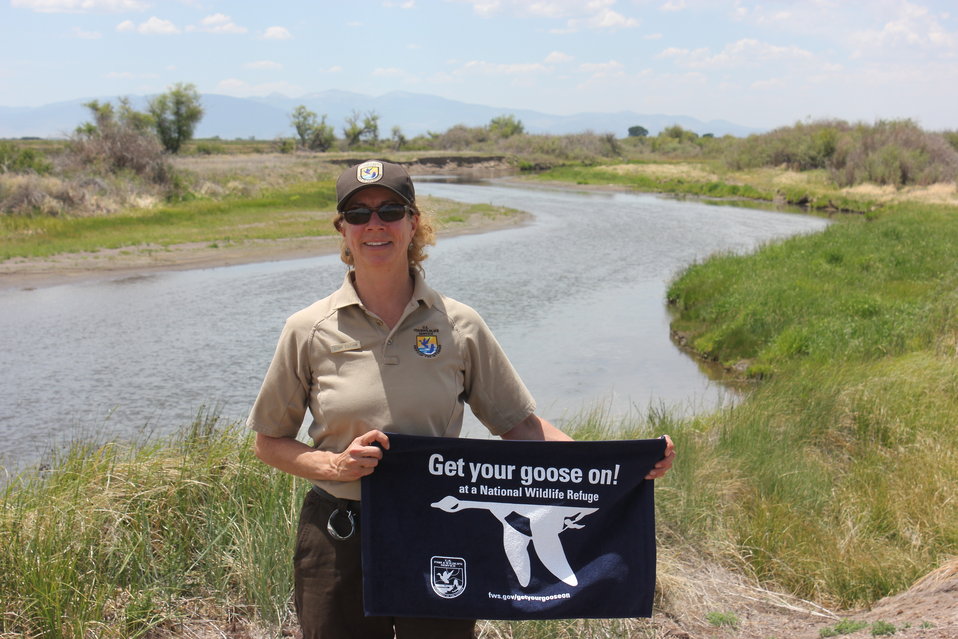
Get Your Goose On! - On the Rio Grande River

Suzanne Beauchaine, Alamosa National Wildlife Refuge manager, poses in front of the Rio Grande River.